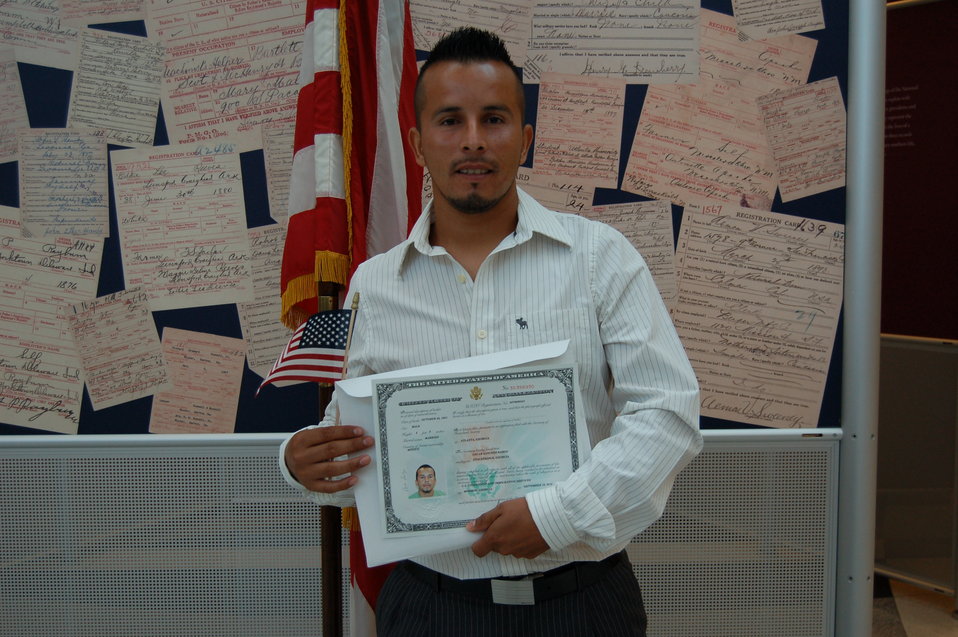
New Citizens